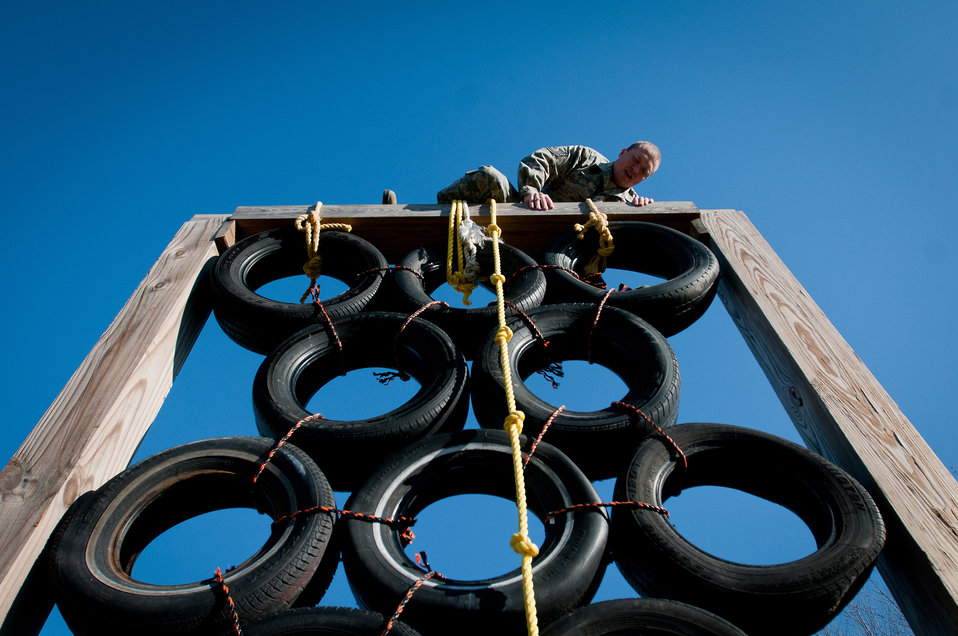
Don't look down

Master Sgt. Josh Devine climbs over a tire tower at Southern High School Dec. 10, 2011, in Louisville, Ky. Airmen from the 123rd Security Force Squadron were at the high school to use the JROTC's obstacle course as a team building exercise in part with the Kentucky Air National Guard Wingman Day. Devine is a member of the 123rd Security Force Squadron.